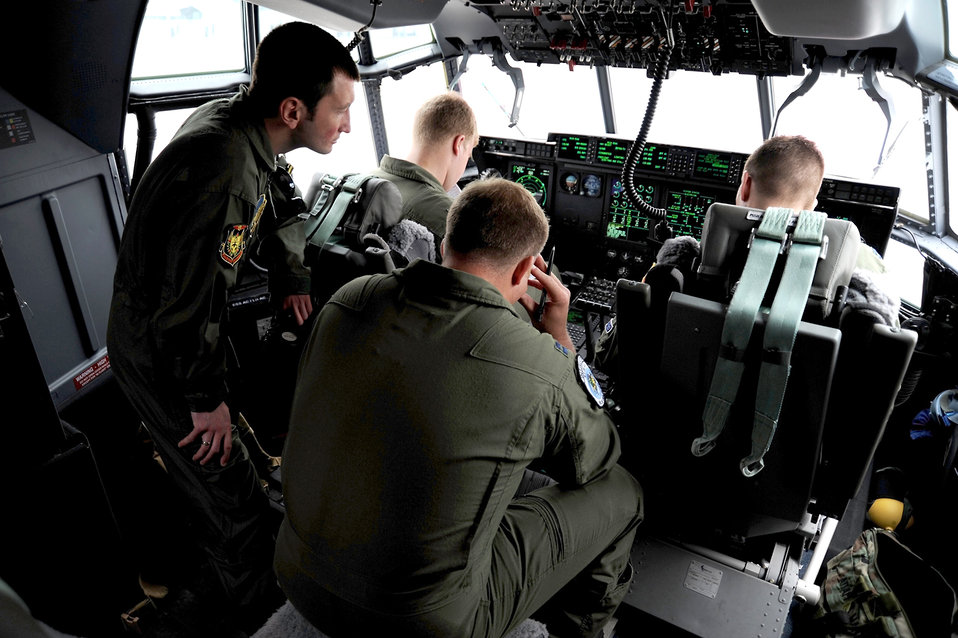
Exercise enhances training, relationships for U.S., Bulgarian military

Bulgarian Air Force Lt. Hristo Valev looks over the shoulders of Capt. Jeff Davis, 1st Lt. Scott Lichtwardt and Capt. Adam Wantuck as they complete startup checks on a C-130 Hercules during Exercise Thracian Spring 2010 April 24, 2010, at Plovdiv Airport in Bulgaria. Lieutenant Valev is an Mi-24 pilot with the Bulgarian 24th air force and Captains Davis and Wantuck and Lieutenant Lichtwardt are all from the 37th Airlift Squadron.